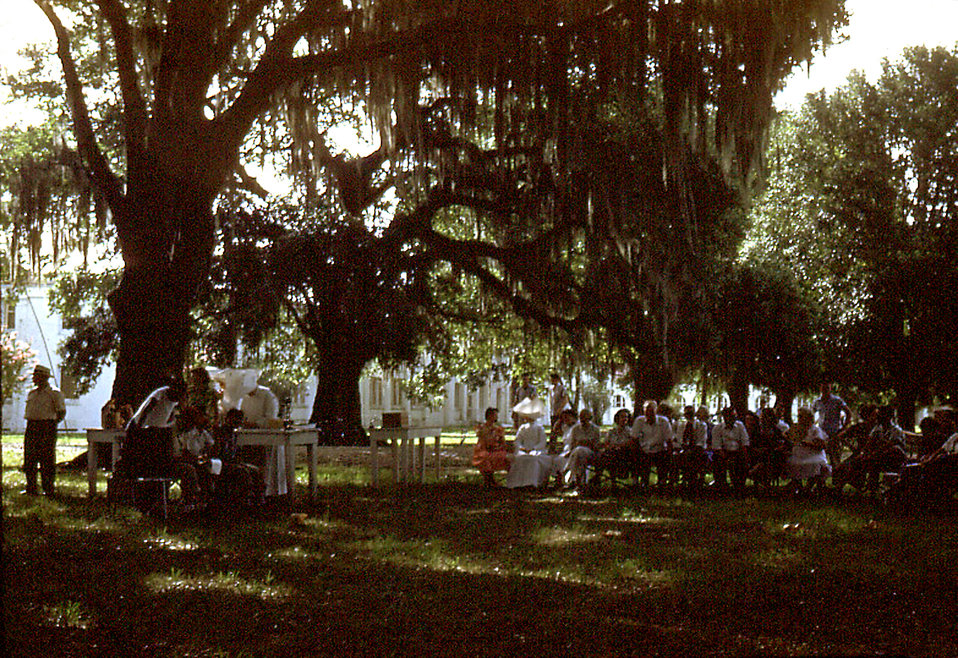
This historic image depicted a gathering of Carville Leprosarium patients as they were enjoying an outing on Lake Johansen, which included a picnic under these large, very old shade trees. Such outdoor events were regularly attended by a majority of patients, especially on Sundays. Lake Johansen was named after one of the Leprosarium's Chief Medical Offiicers, Dr. Frederick A. Johansen.The National Hansen's Disease Museum's (NHDM) mission is to collect, preserve and interpret the medical and cultural artifacts of the Carville Historic District. In addition, we want to promote the understanding, identification, and treatment of Hansen's Disease (leprosy). We fulfill this mission by creating and maintaining museum displays, traveling exhibits, publications and a website in order to educate and inform the public on all levels.